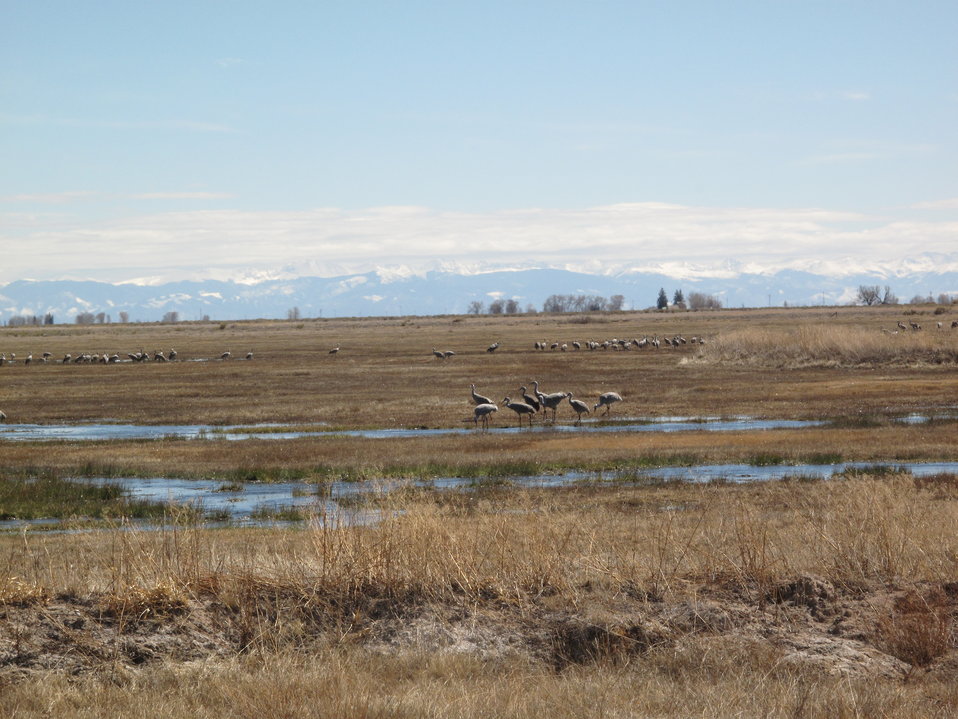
Loafing Cranes

The Monte Vista National Wildlife Refuge serves as a stopover point for cranes during their northward and southward migrations each year. The birds using the Refuge nest primarily in Montana, Idaho and Wyoming and spend winters in New Mexico, Arizona, and Mexico. However, some cranes that visit the Refuge may nest as far away as Alaska and western Siberia.